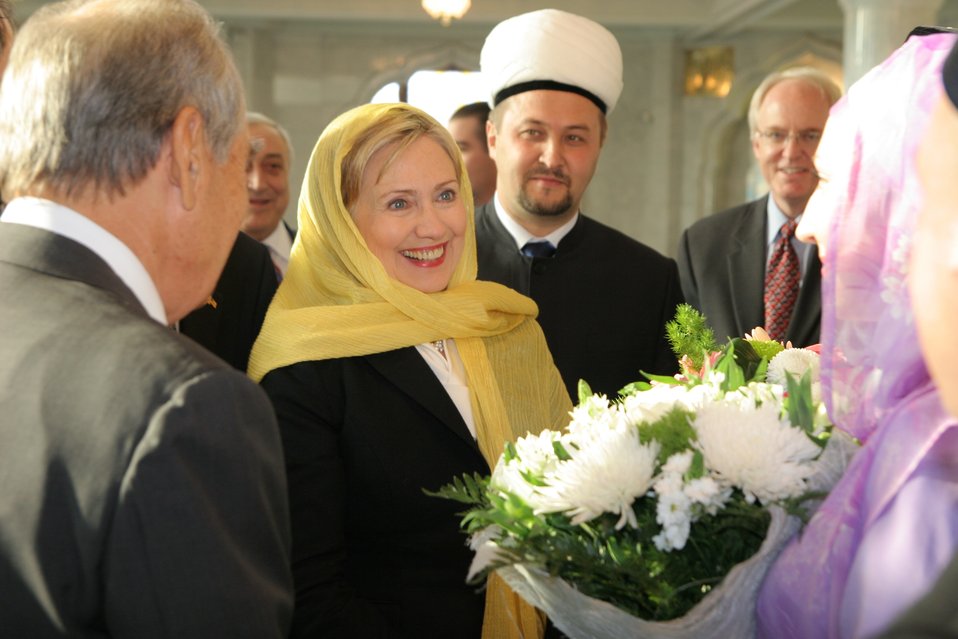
Secretary Clinton and Deputy Mufti Ramil Yunusov With Newly Wed Couple

U.S. Secretary of State Hillary Rodham Clinton and Deputy Mufti Ramil Yunusov congratulate a newly wed couple in Kazan, Russia October 14, 2009.